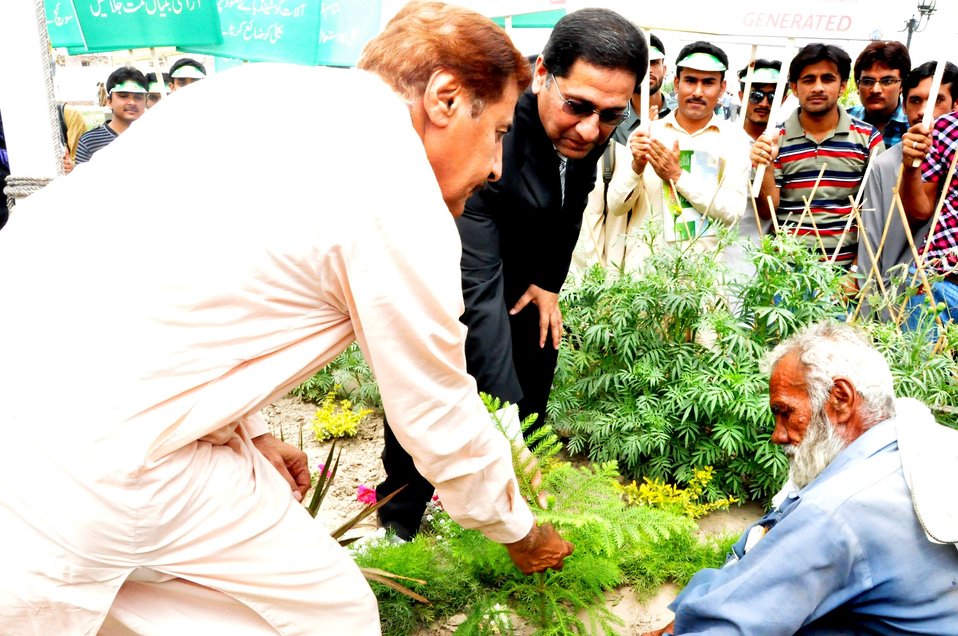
USAID celebrates Earth Day 2013

MEPCO CEO plants a tree to commemorate the world's Earth Day 2013.